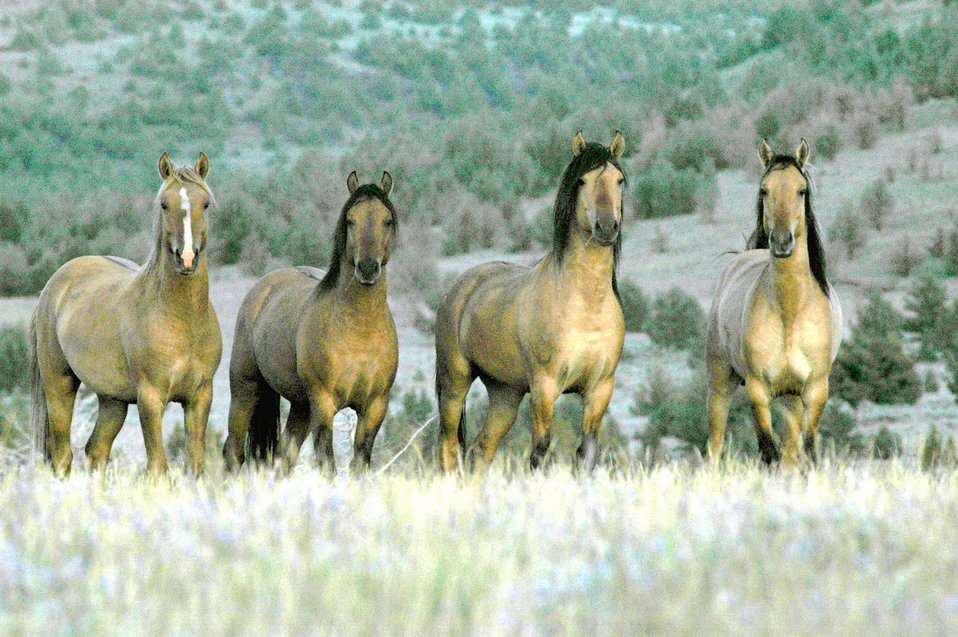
Kiger horses roam the plateaus of the Kiger Wildhorse Herd Management Area near Steens Mountain in Southeastern Oregon.